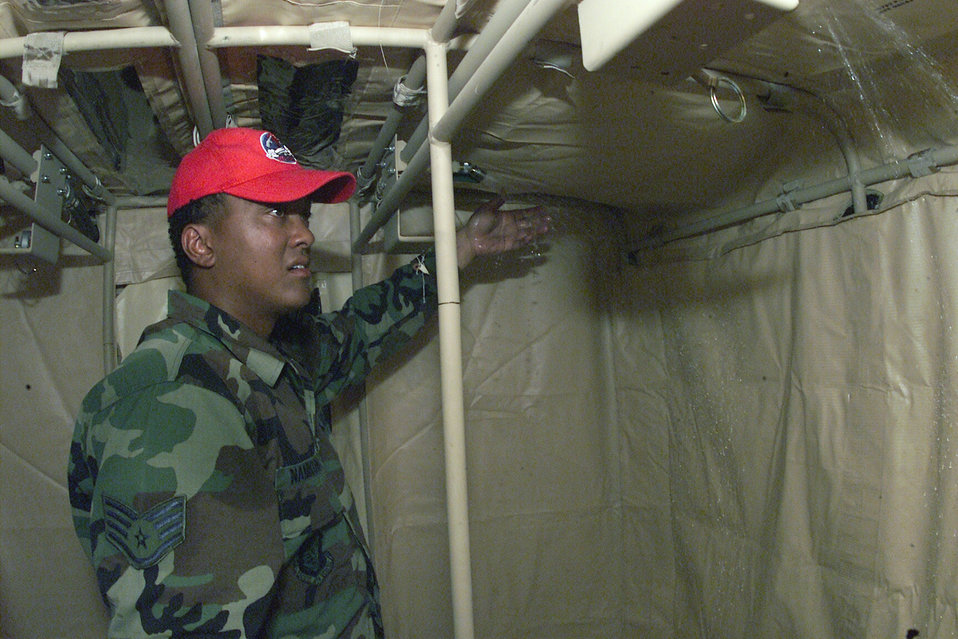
A tents situation

KWANJU AIR BASE, South Korea -- Staff Sgt. Terry Namkung ensures hot water is running for the shower tents here before the 3rd Air Expeditionary Group's arrival. He is deployed from the 554th Red Horse Squadron at Osan Air Base, South Korea.